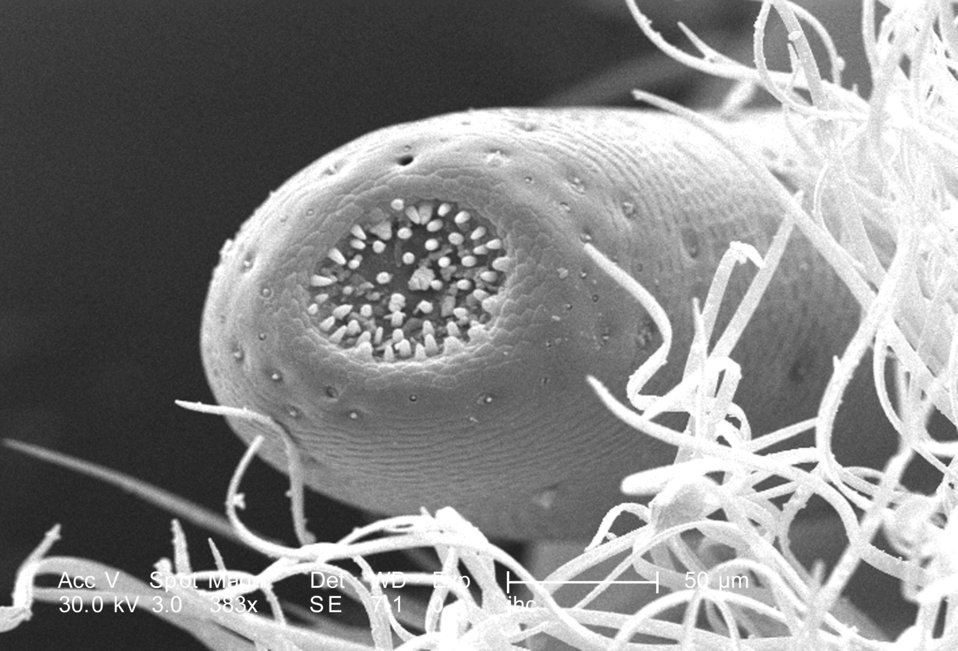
Magnified 383X, this scanning electron micrograph (SEM) revealed the morphologic details found at the tip of this adult 'figeater' beetle's, Cotinis mutabilis, maxillary 'galea', which due to its shape, was given this Latin name for 'helmet'. The galea is located just medial to another, more prominent maxillary appendage, the palpus. Note the concave configuration at the distal tip of the galea, and how there are numerous pointed protuberances inside this concavity, which are most probably sensorial in nature. See PHIL 9933 and 9934, for additional views of this structure at greater magnifications.